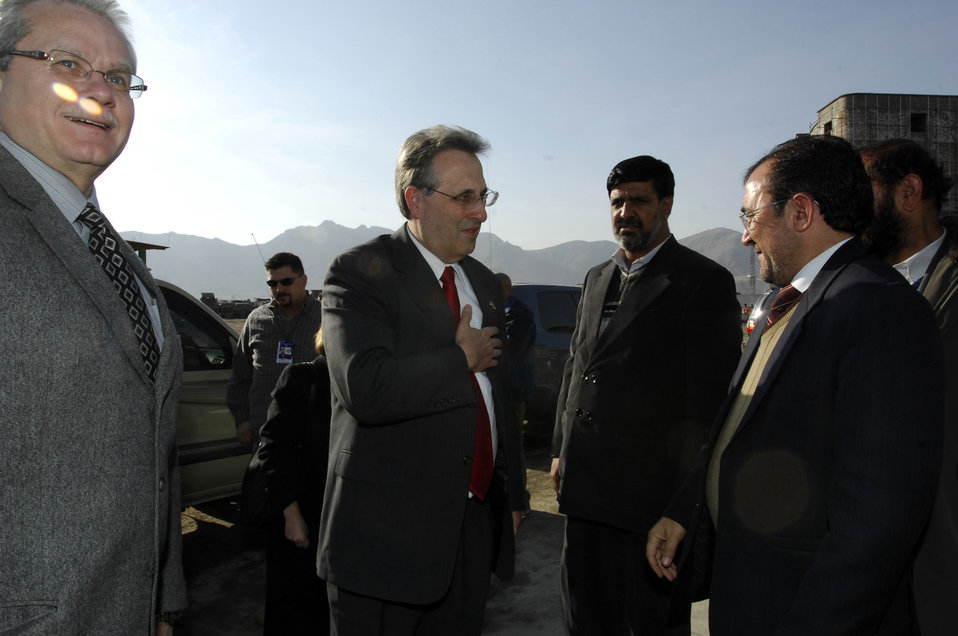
Care74 (1)